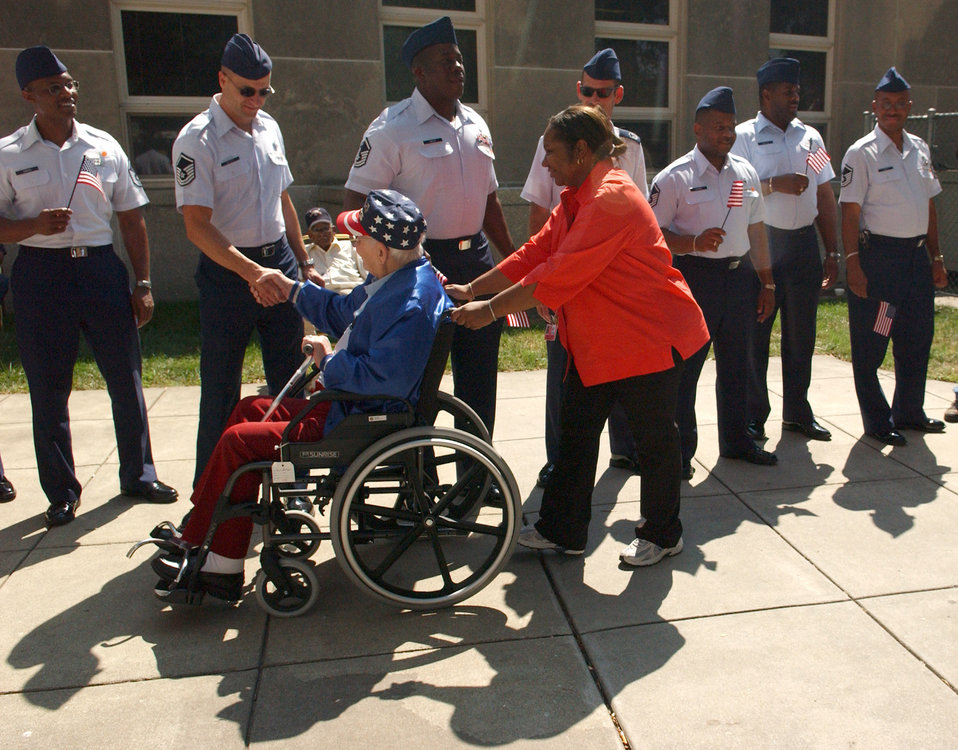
Airmen spruce up living space for retirees displaced by Katrina

WASHINGTON -- After a long two-day bus drive, military retirees were greeted by more than 100 military and civilian volunteers Sept. 1. The volunteers helped in-process more than 400 veterans from Gulfport, Miss. The veterans were displaced by the effects of Hurricane Katrina and will be housed at the retirement home until their facility can be repaired, which is estimated to take more than a year.